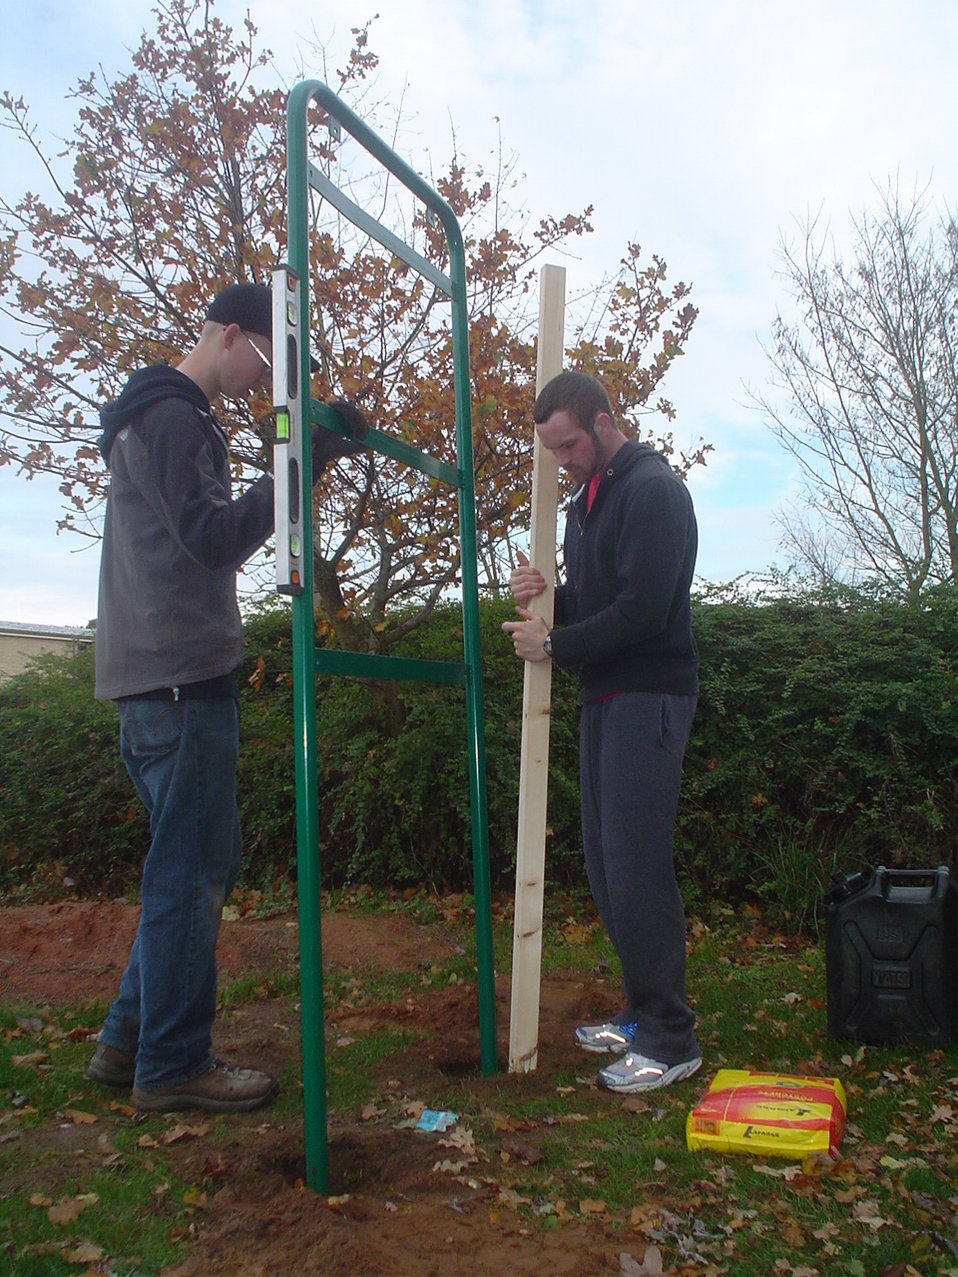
Eagle service project

Joshua Kent (left) and Mick McNaughton position the poles of one of the 15 new fitness stations along the running trail at Royal Air Force Lakenheath, England. Joshua, a Boy Scout with local Scout Troop 219, initiated this service project to help earn his Eagle Scout badge.